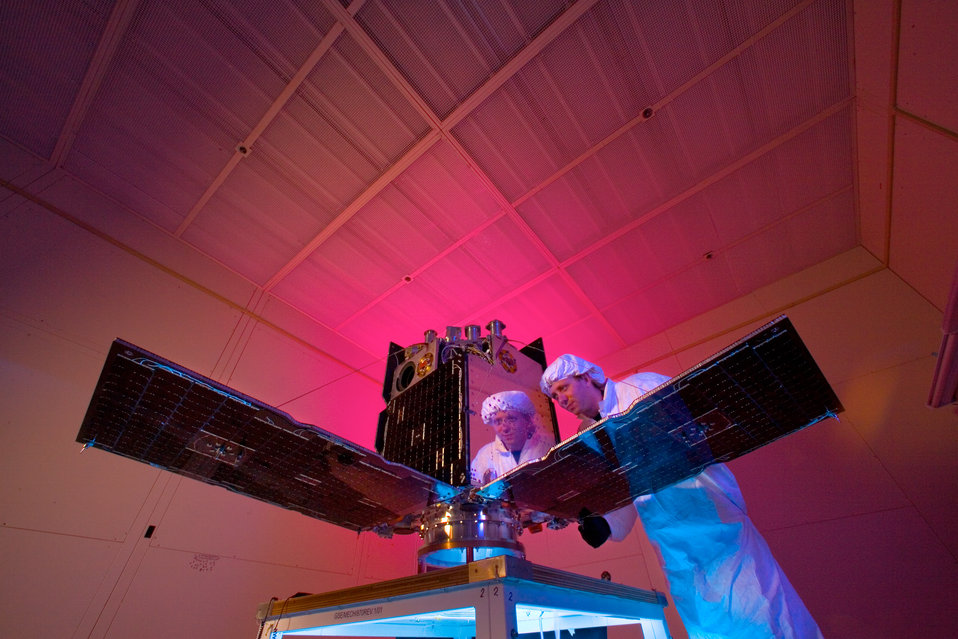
#Supercomputing… from #Space

The Cibola Flight Experiment (CFE) is an experimental small satellite that was designed to prove that off-the-shelf computer processors can be used for supercomputing in space. The processors, also called field-programmable gate arrays, can be reconfigured while the satellite is in orbit, enabling researchers to modify them for a variety of tasks like studying lightning, disturbances in the ionosphere, and radio-frequency sources.

The CFE #satellite was launched on March 8, 2007, in low-earth orbit, and has operated successfully since its deployment. In this 2006 photo, Los Alamos National Laboratory scientist Daniel Seitz works on preparing the CFE satellite.